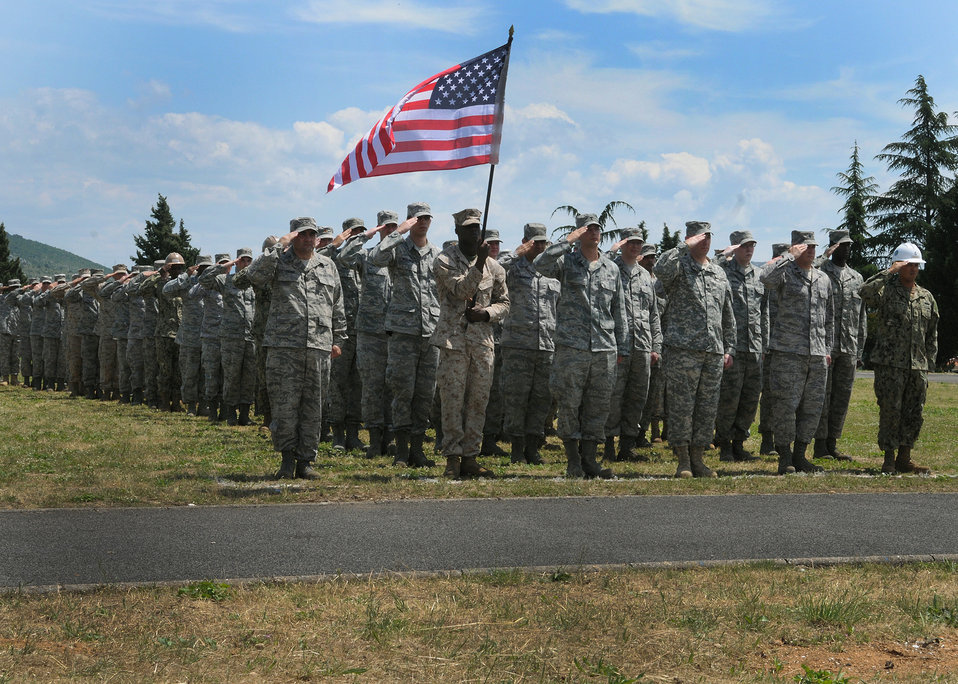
Multinational medical exercise readies forces

U.S. military members of Shared Resilience 2012 render salutes for the United States and Bosnian-Herzegovinian national anthems during the exercise’s opening ceremony at Capljina, Bosnia and Herzegovina, May 28, 2012. More than 500 military members from nine nations are participating in the annual U.S. Joint Chiefs of Staff-sponsored exercise May 28 to June 8.